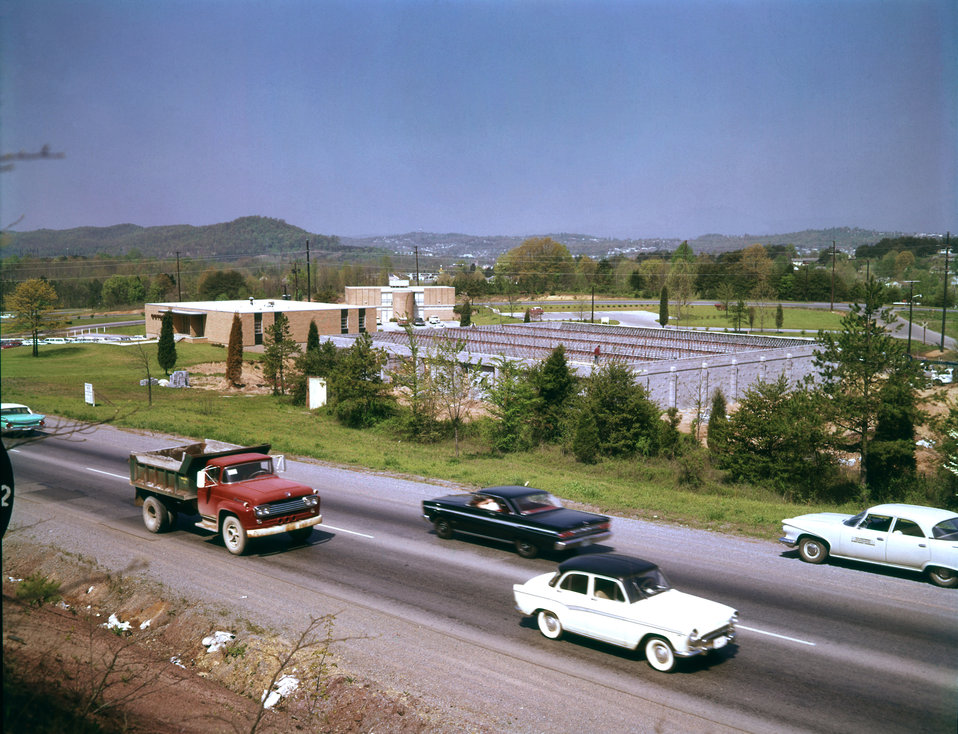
Oak Ridge Turnpike

DOE photo by Ed Westcott 1960s Oak Ridge Tennessee